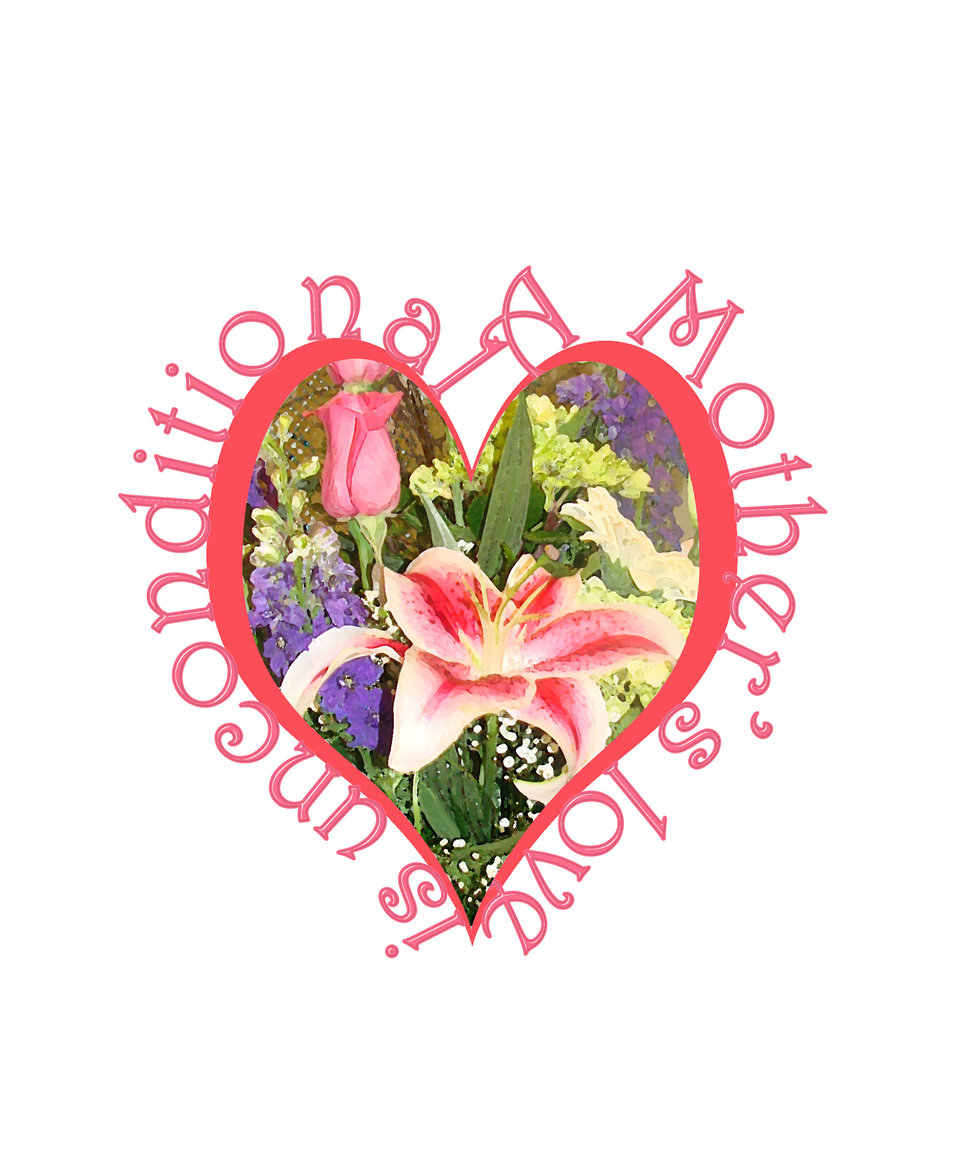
A mother's love is unconditional illustration.